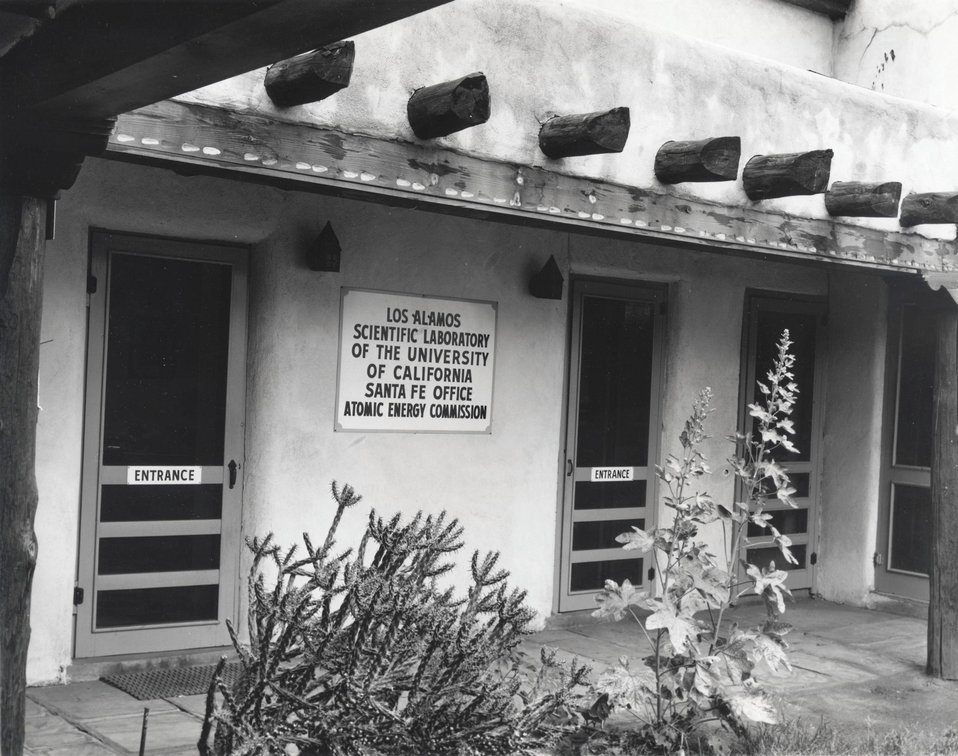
SANTA FE OFFICE